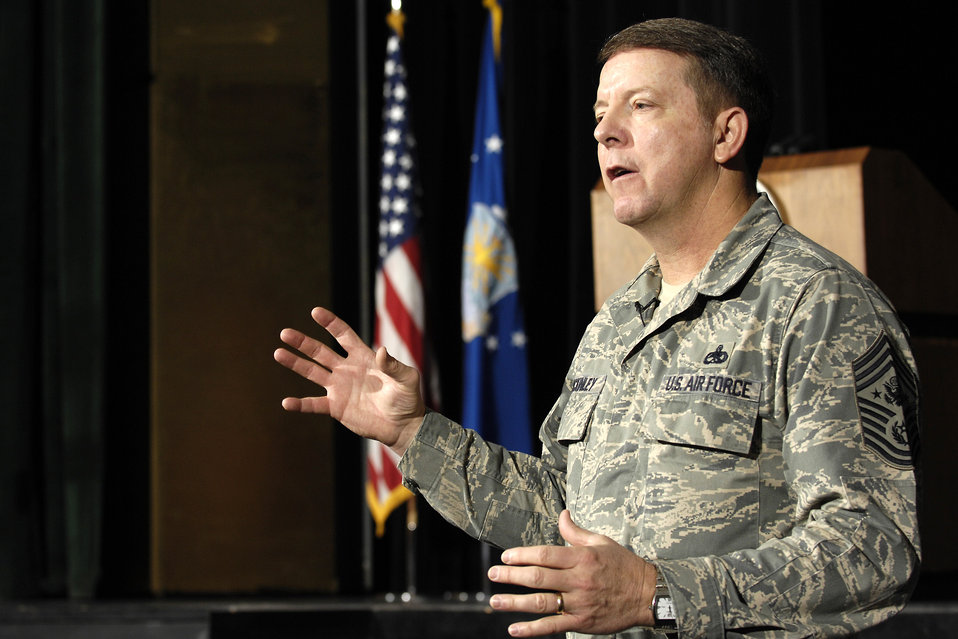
CMSAF visits Academy

Chief Master Sgt. of the Air Force Rodney J. McKinley speaks before an enlisted call held April 10 in Arnold Hall at the U.S. Air Force Academy in Colorado. Chief McKinley visited Academy Airmen to brief on the Air Force's top priorities.